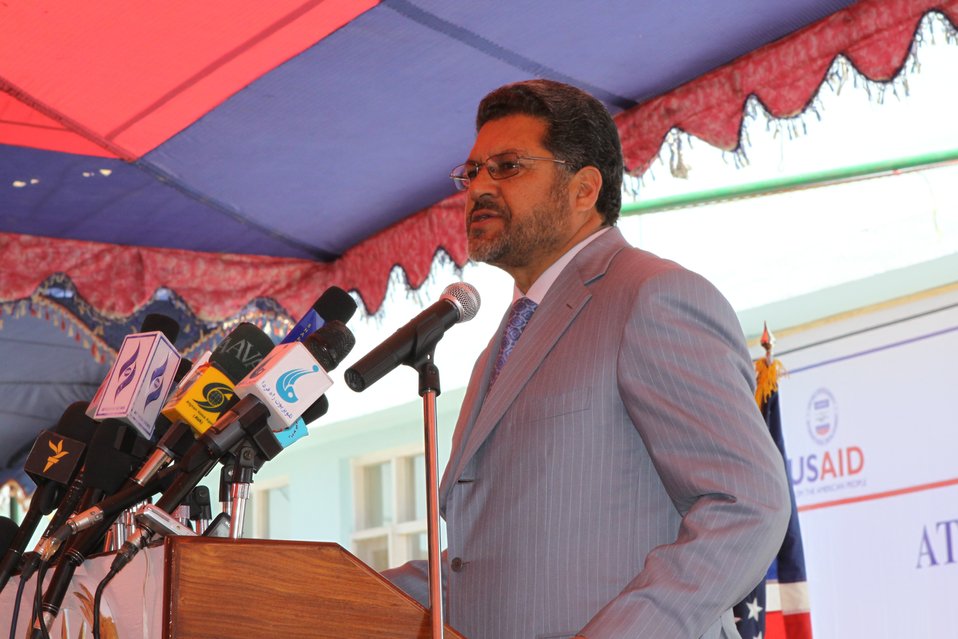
100522 ATVI Graduation 075